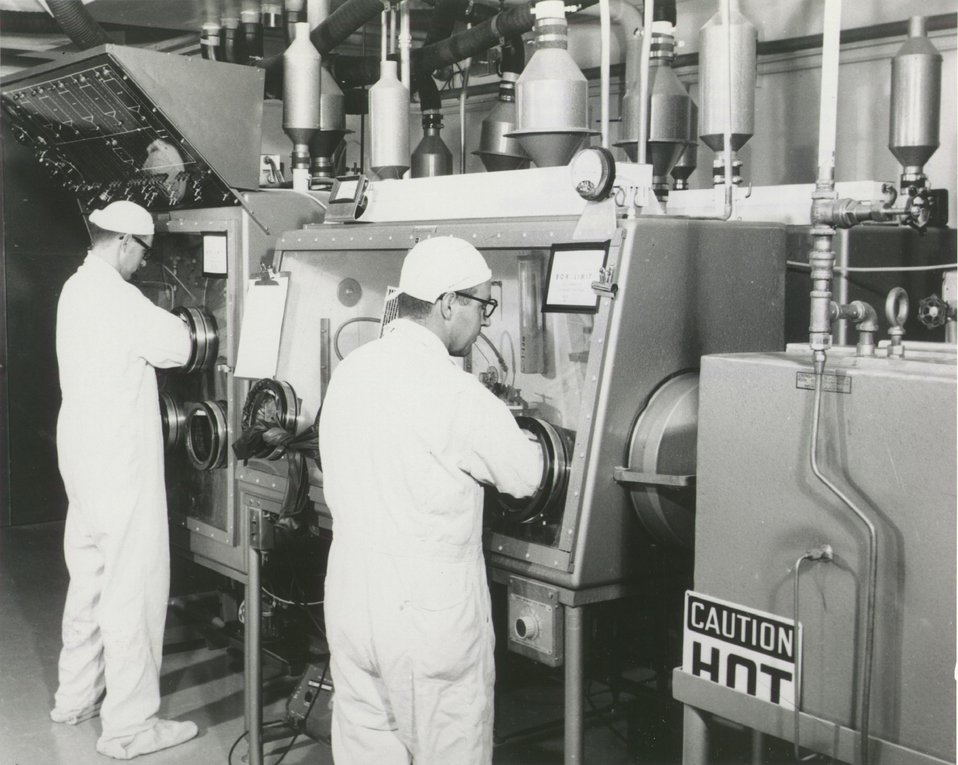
Research and development work on peaceful applications of plutonium as a nuclear reactor fuel is underway in a new $110,000 facility at General Electric's Vallecitos Atomic Laboratory. c. 1964